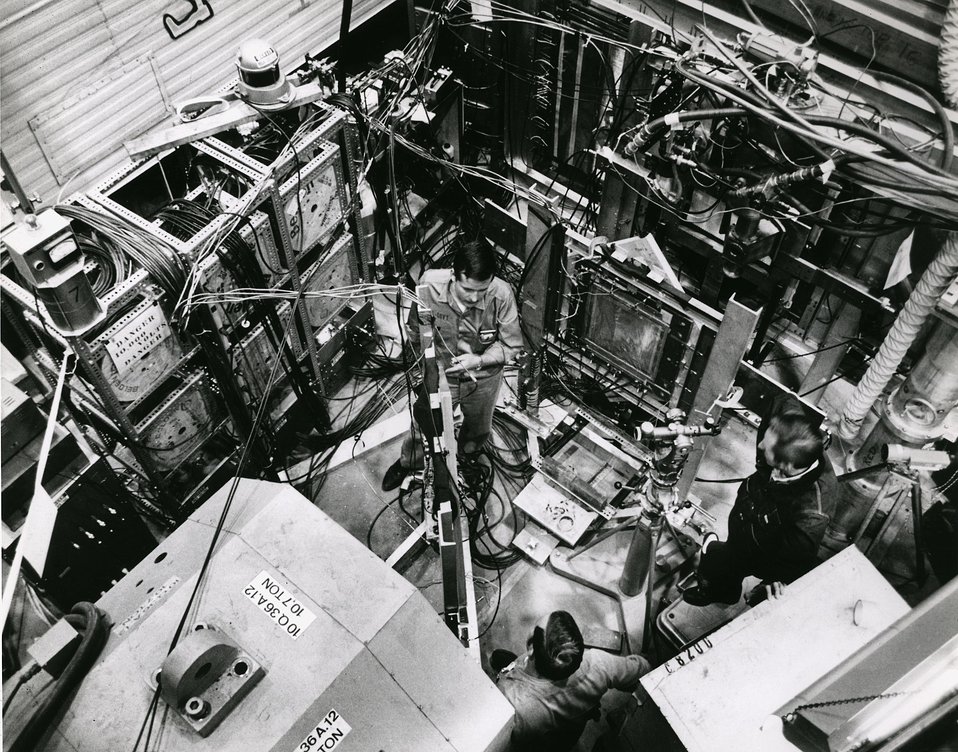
A high energy physics experiment located along the proton beam of Argonne's ZGS. Shown is some of the sophisticated equipment required to perform such experiments.
c.1970